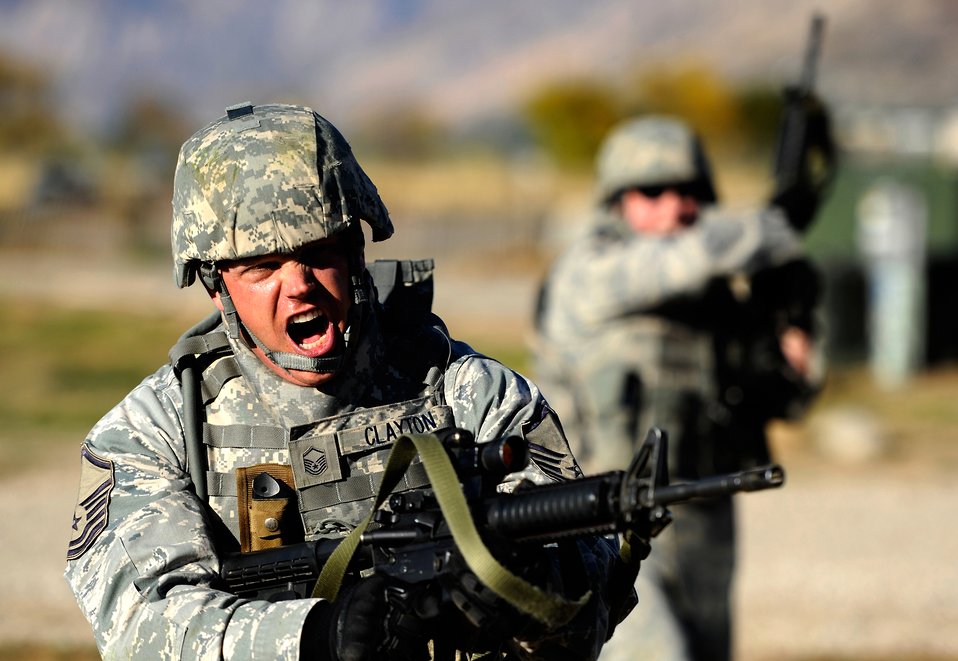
Hey, stop there!

Master Sgt. Douglas Clayton puts his training to use during the 75th Security Forces Squadron Combat Readiness Training course at Hill Air Force Base, Utah, Oct. 18, 2010. The one-week course physically and mentally prepares Airmen for deployments. Sergeant Clayton is the flight chief for the squadron.